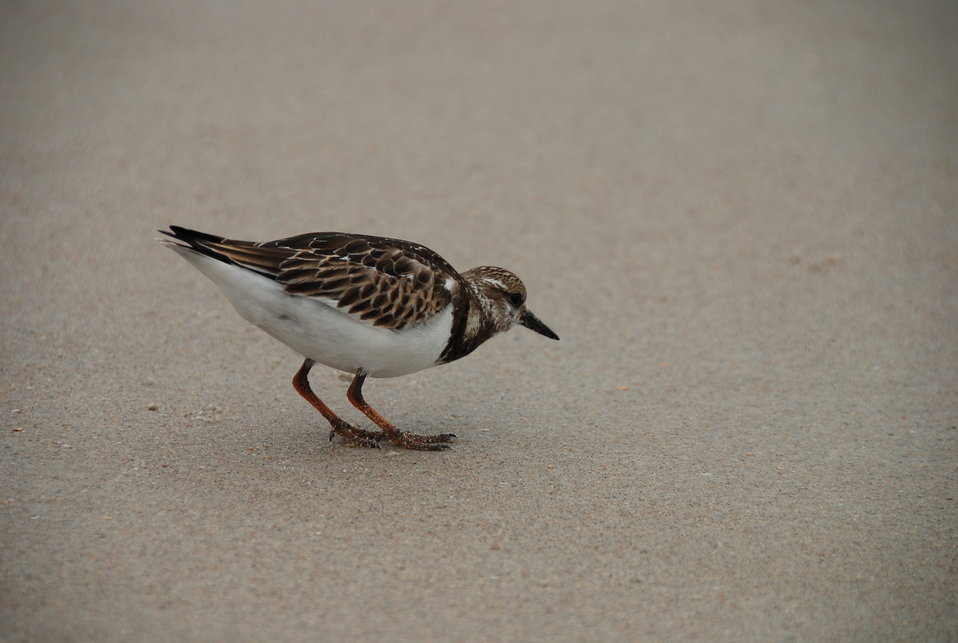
Ruddy turnstone